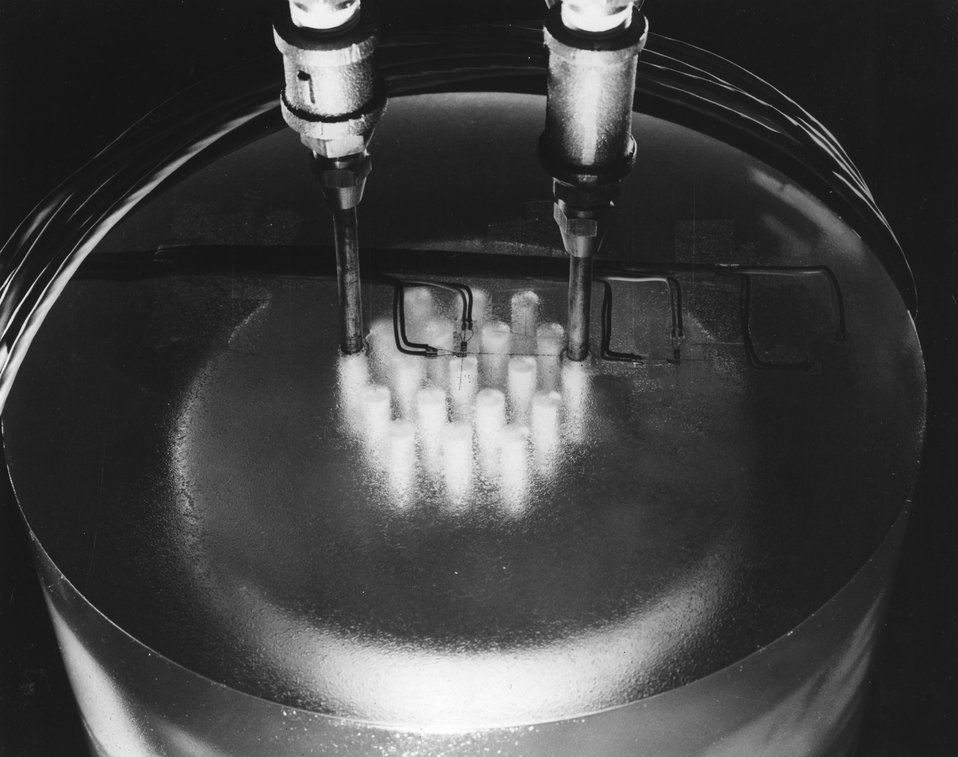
An epoxy model of a concrete pressure vessel is placed in a scattered light polariscope at Oak Ridge National Laboratory. c. 1967